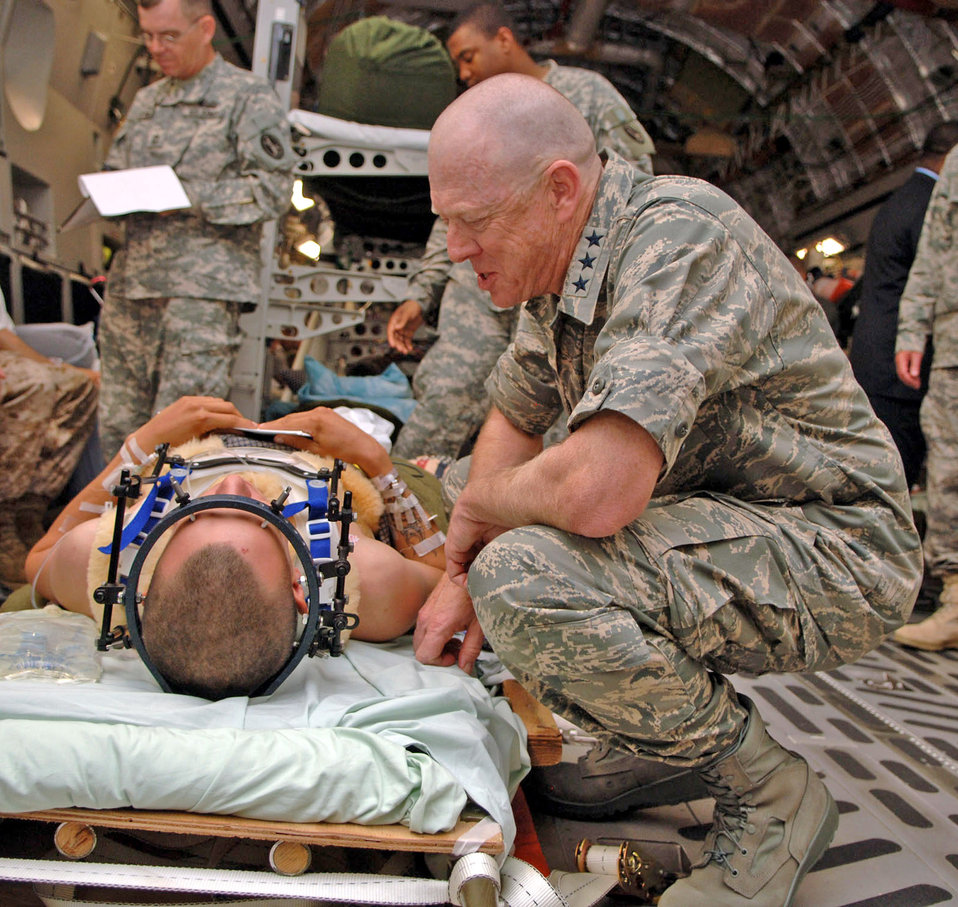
Aeromedical care

Lt. Gen. (Dr.) James G. Roudebush, Air Force surgeon general, chats with a wounded Soldier returning from overseas during a visit to Malcolm Grow Medical Center's Aeromedical Staging Flight at Andrews Air Force Base, Md., June 26. The Soldier was secured to the litter to ensure no further injury during transport on the C-17 Globemaster III, which was flown by a crew from the Mississippi Air National Guard's 172nd Airlift Wing. With General Roudebush was Dr. S. Ward Casscells, the new assistant secretary of defense for health affairs.